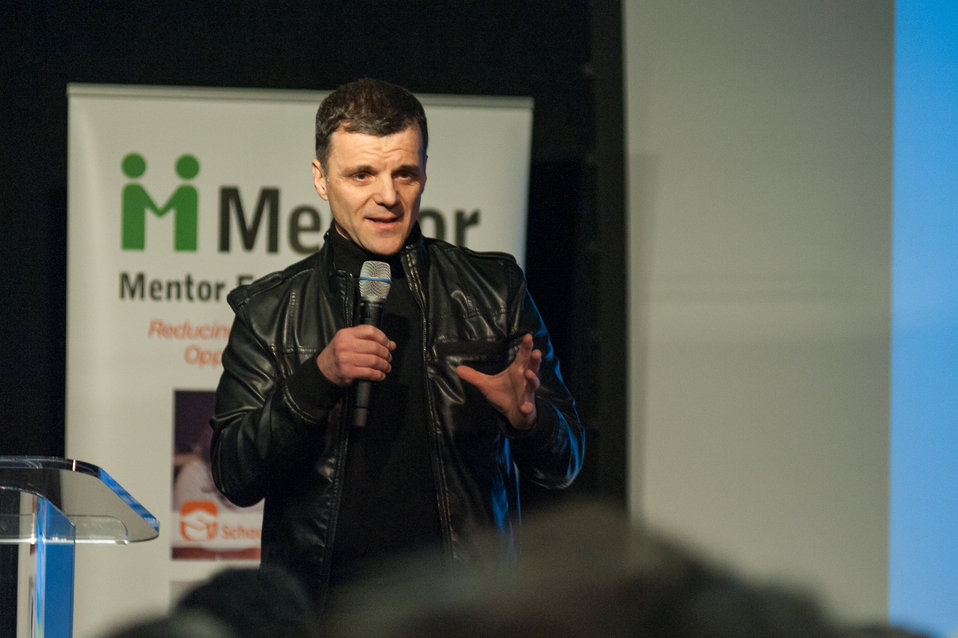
Mentor NDFW Event 2014

Mentor Foundation USA, in partnership with the National Institute on Drug Abuse (NIDA) and other key partners hosted a Youth Drug Facts Rally at the House of Sweden on Thursday, 30th January 2014. Approximately 200 students from five local high schools attended and had the opportunity to interact with top U.S. scientific experts, including Dr. Ruben Baler of NIDA and inspiring guest speakers to “shatter the myths” about drugs and substance abuse, while pledging to stay drug-free.